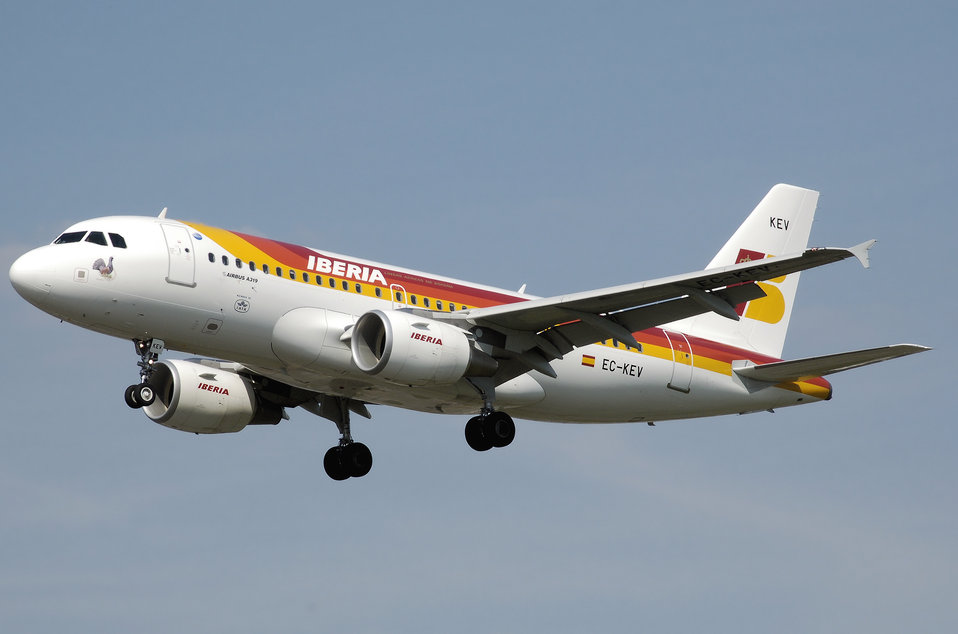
Iberia.a319-100.ec-kev.arp